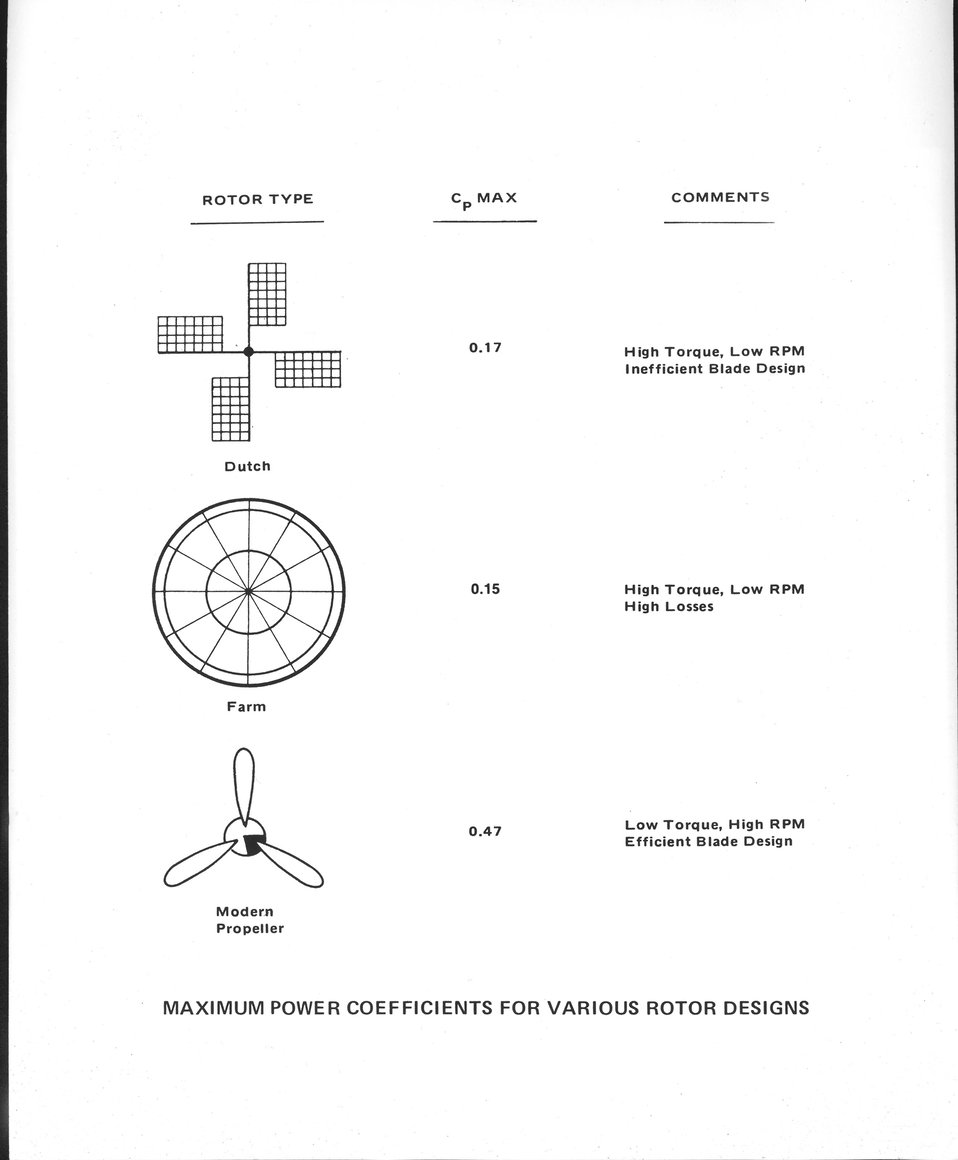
The power in the wind must be captured by wind machines and converted to electricity to help solve the Nation's energy supply problems. c. 1977